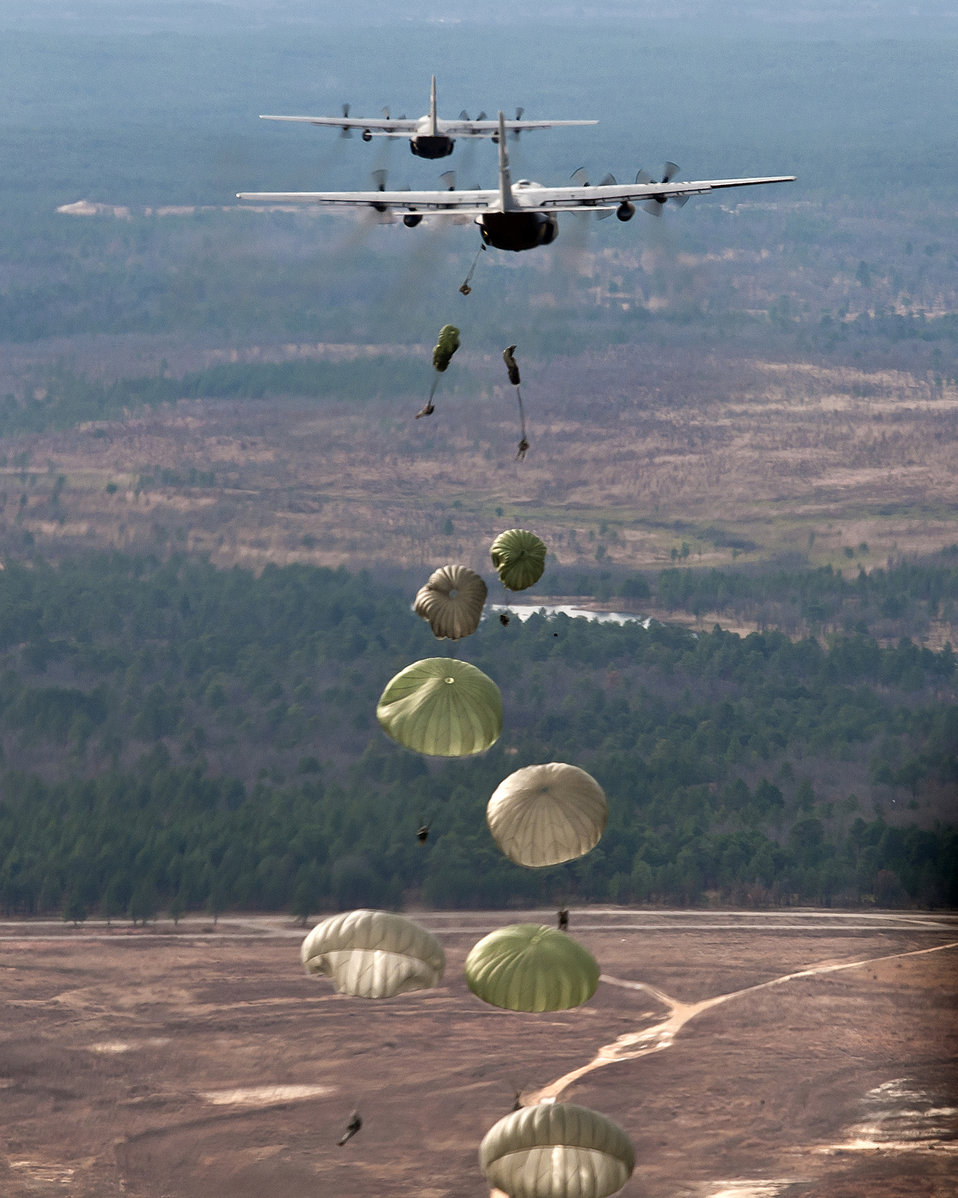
Santa's helpers

Members of the the 914th Airlift Wing participate in the annual Operation Toy Drop Dec. 10, 2011, at Fort Bragg, N.C. Operation Toy Drop is a week-long project where Fort Bragg's paratroopers donate toys to be distributed to local children in need.